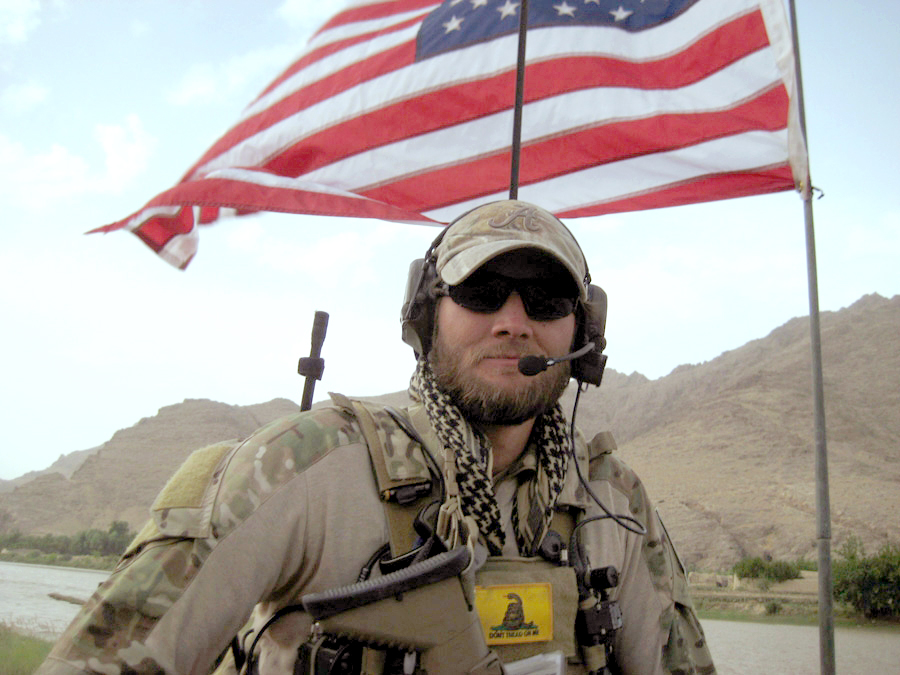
Airman dies

Senior Airman Mark Forester was killed in Uruzgan province, Afghanistan, when his special forces unit came under attack Sept. 29, 2010. Airman Forester was assigned to the 21st Special Tactics Squadron at Pope Air Force Base, N.C.